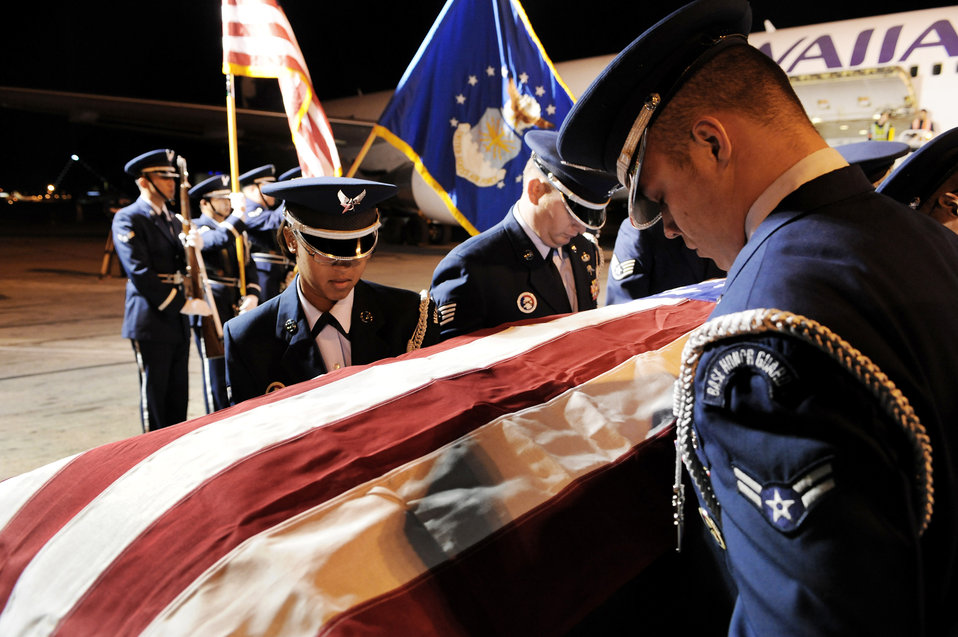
MIA pilot returned

The Nellis Air Force Base, Nev., Honor Guard provides a dignified transfer for the remains of Maj. Russell C. Goodman on the flightline at McCarran International Airport in Las Vegas, Jan. 12, 2010. Major Goodman was shot down over North Vietnam in February 1967.